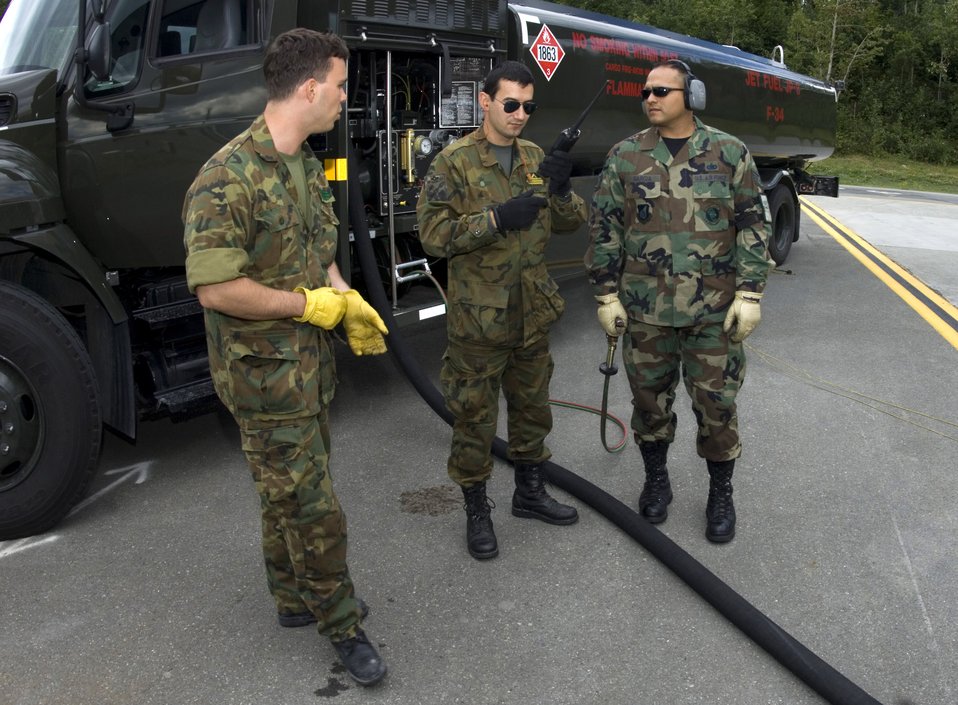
Elmendorf, coalition forces hone skills at Red Flag-Alaska

Spanish air force Senior Airman Jesus Utrilla and Master Sgt. Jose Arias work with Staff Sgt. Carlos Garcia while fueling a C-130 from Spain July 23 at Elmendorf Air Force Base, Alaska. Sergeant Garcia, assigned to the 3rd Logistics Readiness Squadron, is an Air Force liaison to the Spanish air force and is working with them during Red Flag-Alaska. More than 80 aircraft and 1,500 servicemembers from the six countries are flying together in this multinational exercise that provides realistic combat training in a safe and controlled setting over the Pacific Alaskan Range Complex and Eielson AFB, Alaska.